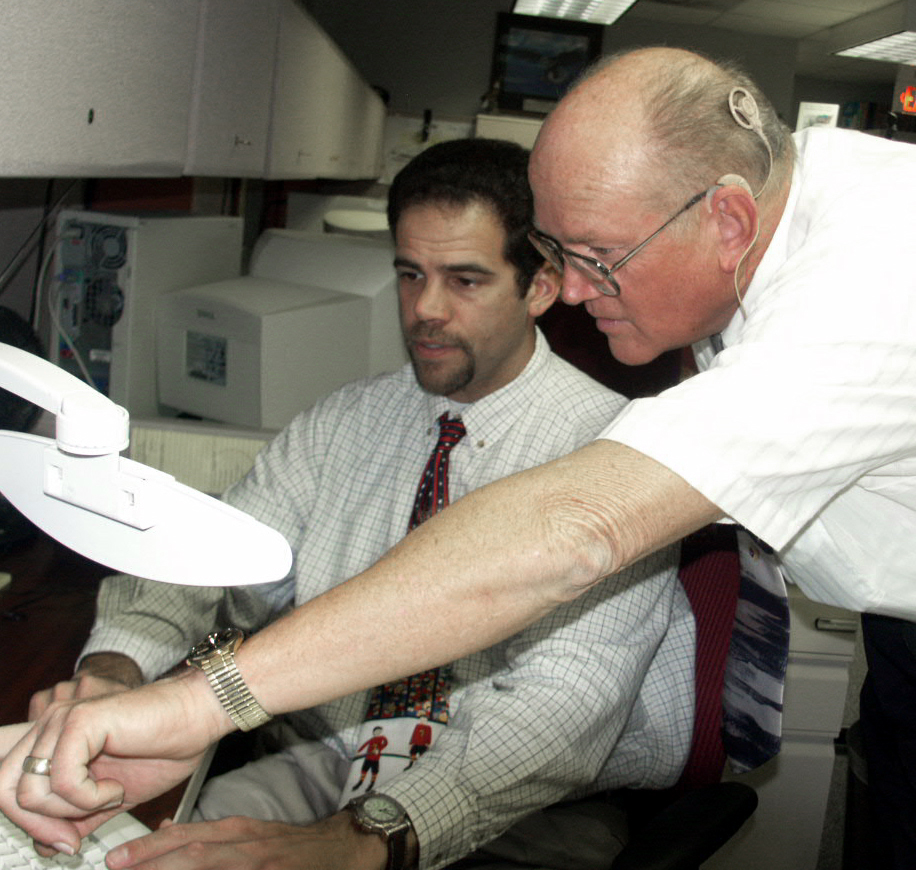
Implant restores hearing

LACKLAND AIR FORC BASE, Texas -- Retired Maj. Robert Graves (right) discusses simulation technology with Steven Alagona, course manager for security-forces training here. Graves received a cochlear implant at Wilford Hall Medical Center on Jan. 8. He is the chief of the 342nd Training Squadron's training development element of security-forces training.